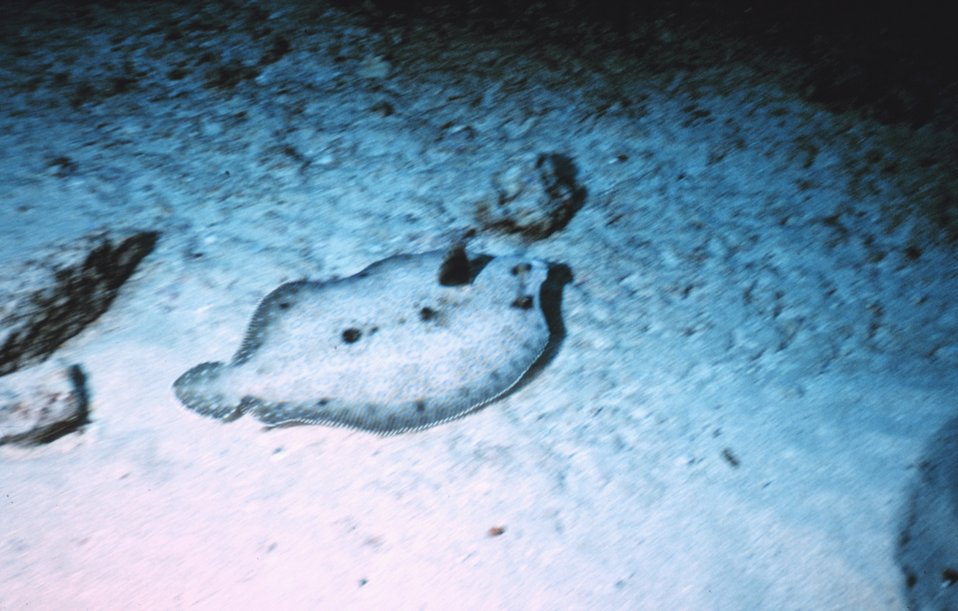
Hawaiian flounder - Samariscus triocellatus.